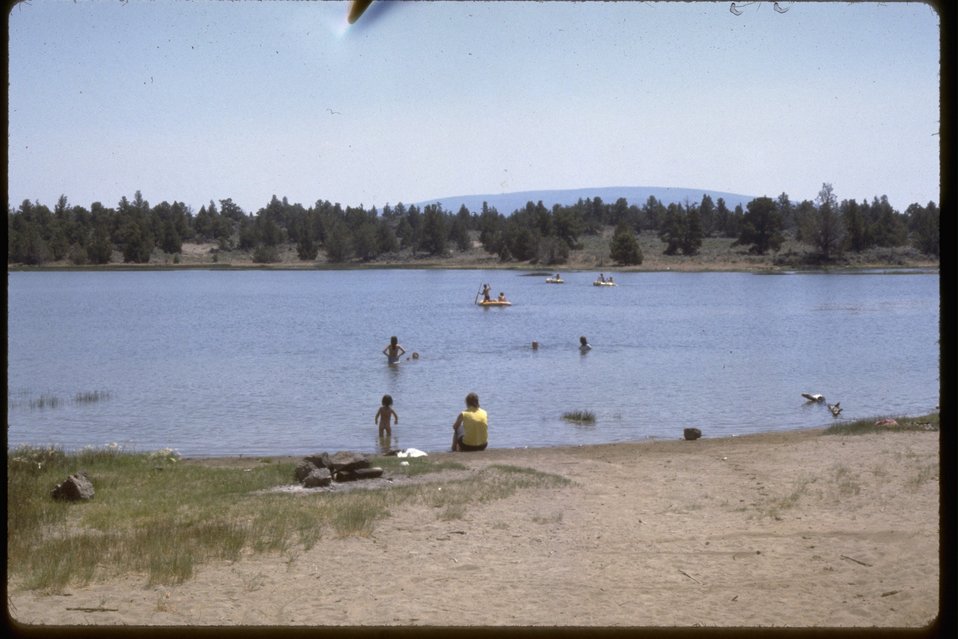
Many people swimming and rafting at Reynold's Pond.